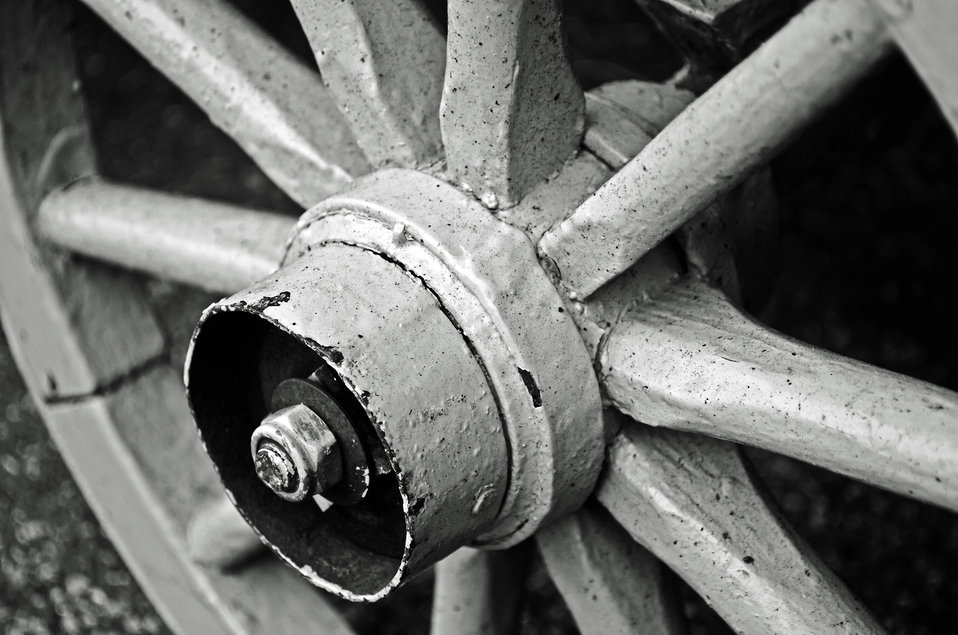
Old wooden wheel.